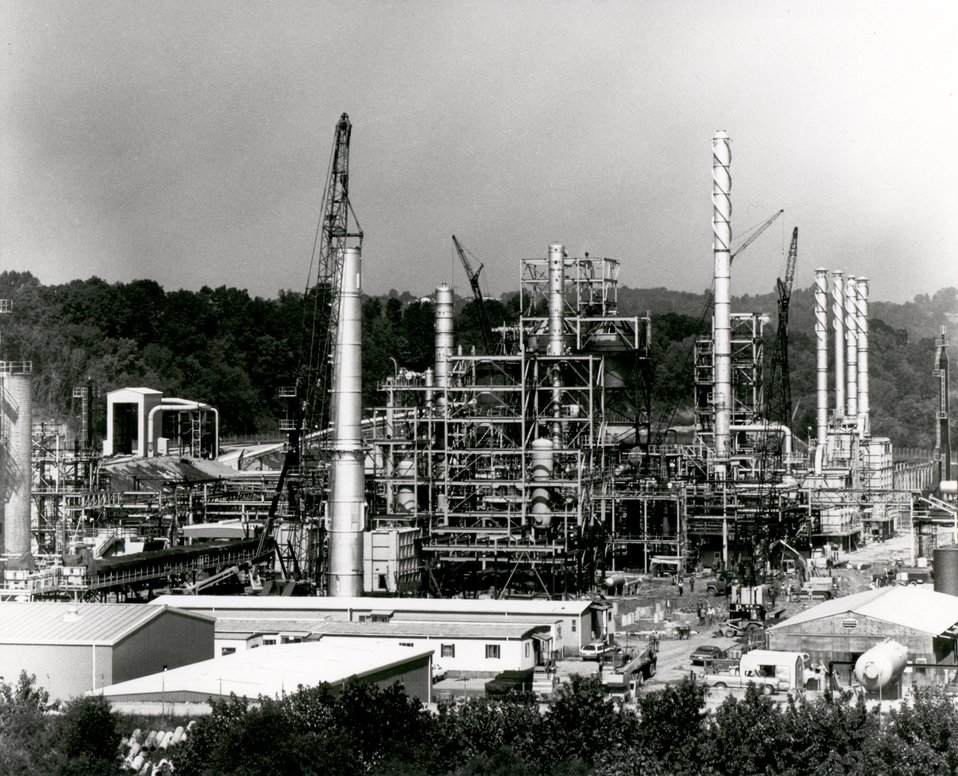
An overview of the H-Coal Pilot Plant with a capacity of 600 tons of coal per day. Circa 1979.